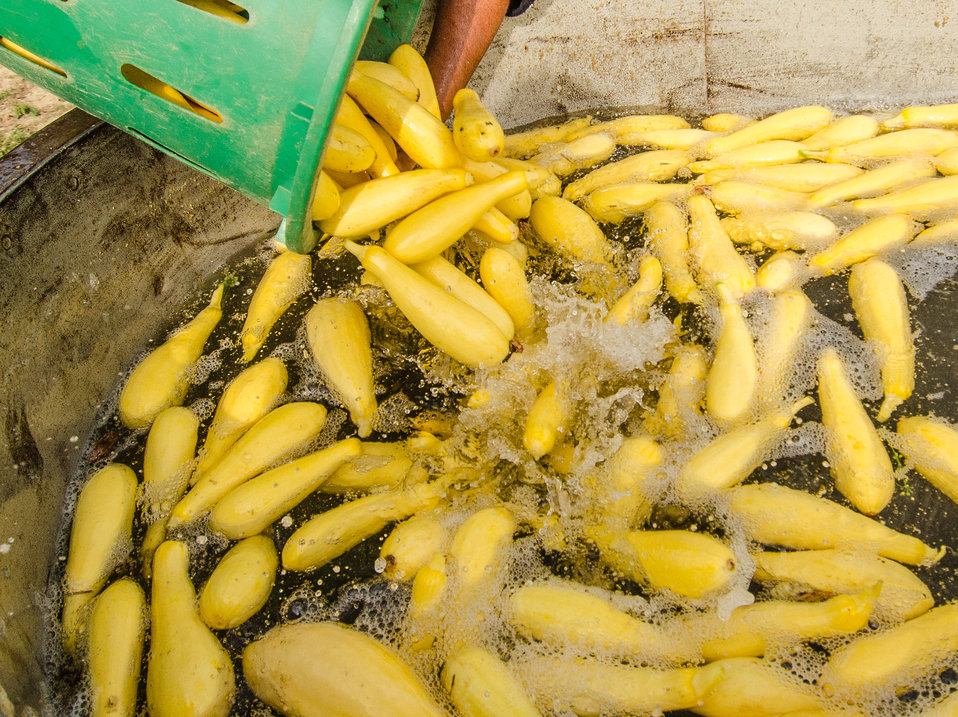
Migrant workers rinse and pack just-picked yellow squash on a processing trailer at Kirby Farms in Mechanicsville, VA on Sep. 20, 2013. Kirby Farms is a third-generation family farm that covers 500 acres, and generates produce and grains on a year-around operation.